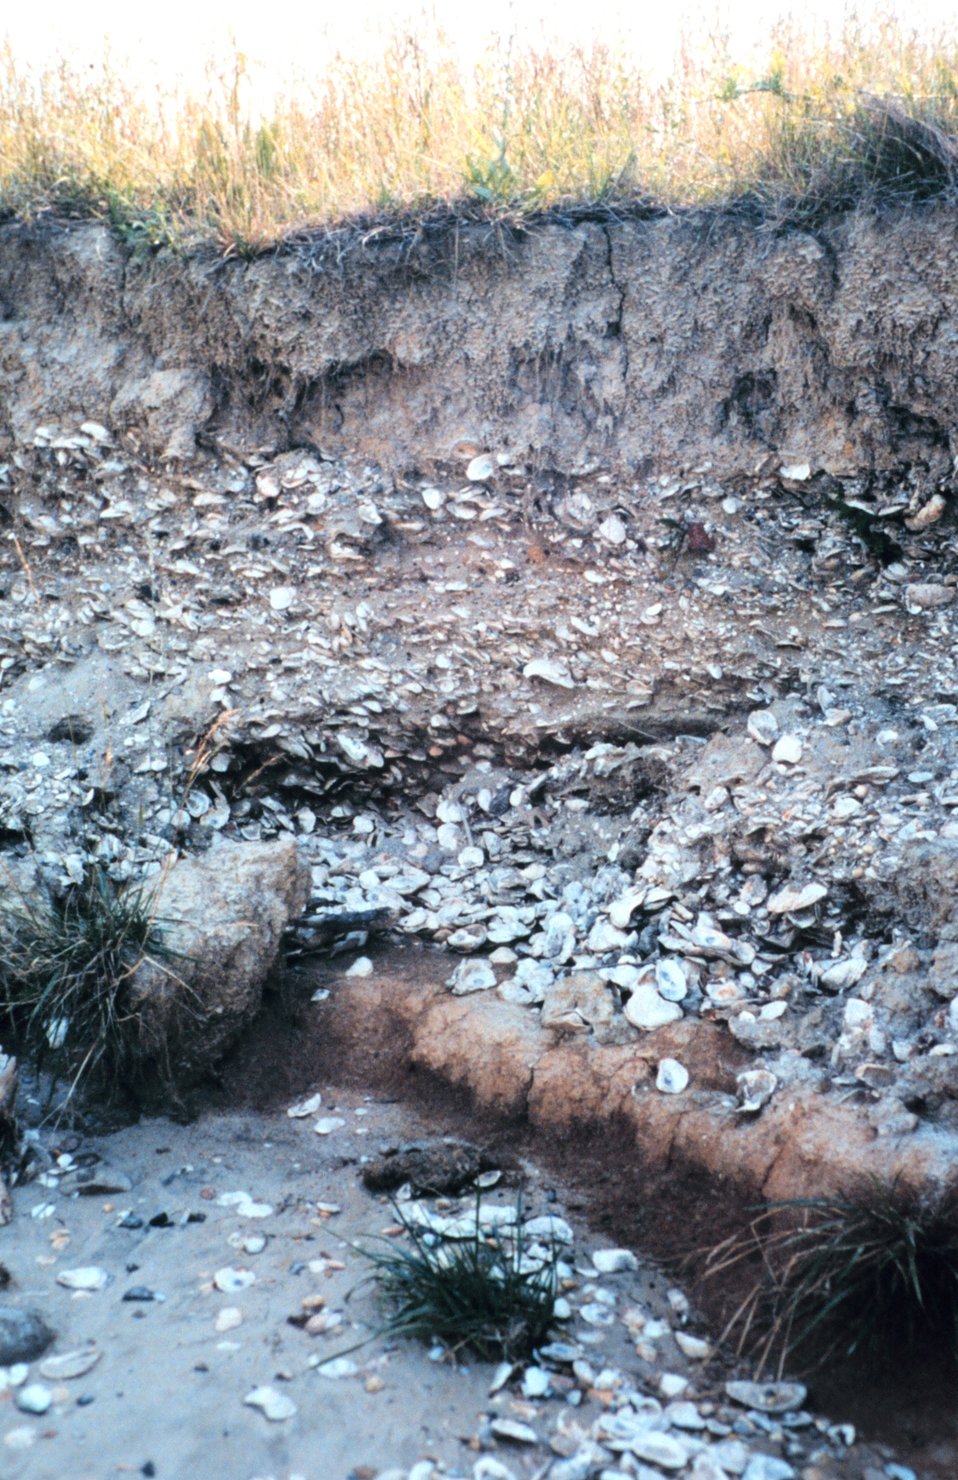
Eroded cliffs along the Tred Avon River reveal buried piles of oyster shells.